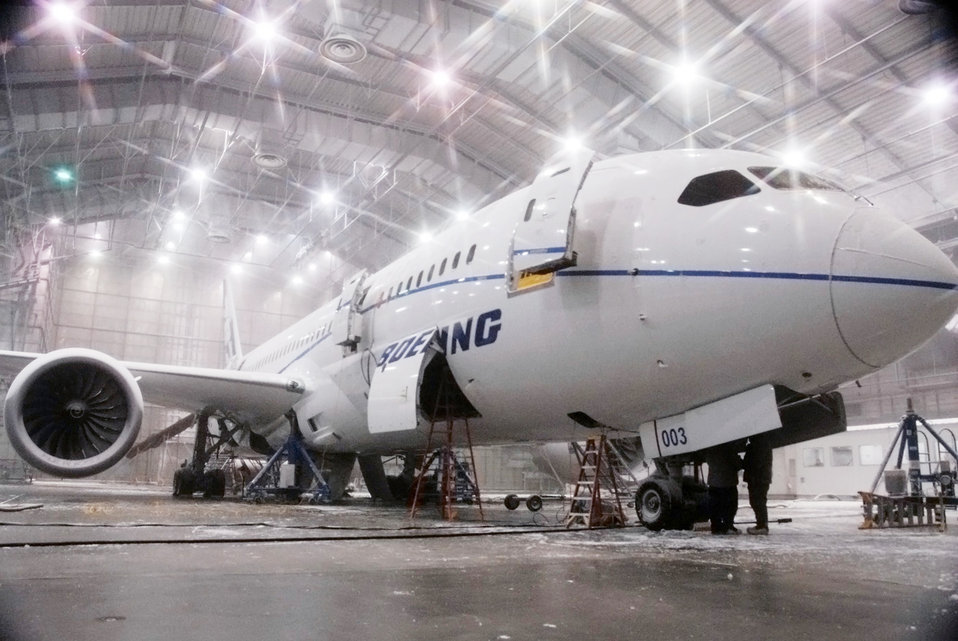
Boeing officials bring 787 to Eglin AFB for weather tests

A Boeing 787 Dreamliner